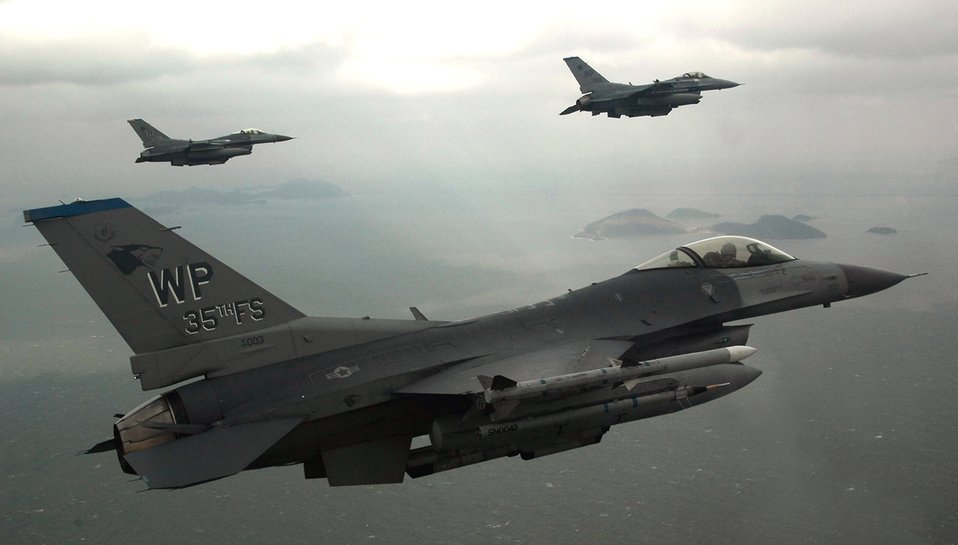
Falcons fly over South Korea

F-16 Fighting Falcons fly on a training mission Jan. 30 over the South Korean peninsula. F-16s can locate targets in all weather conditions and detect low flying aircraft in radar ground clutter. Pilots assigned to the 35th Fighter Squadron from Kunsan Air Base, South Korea, use training missions to simulate actual conditions they may face in combat and keep their warfighting skills honed.